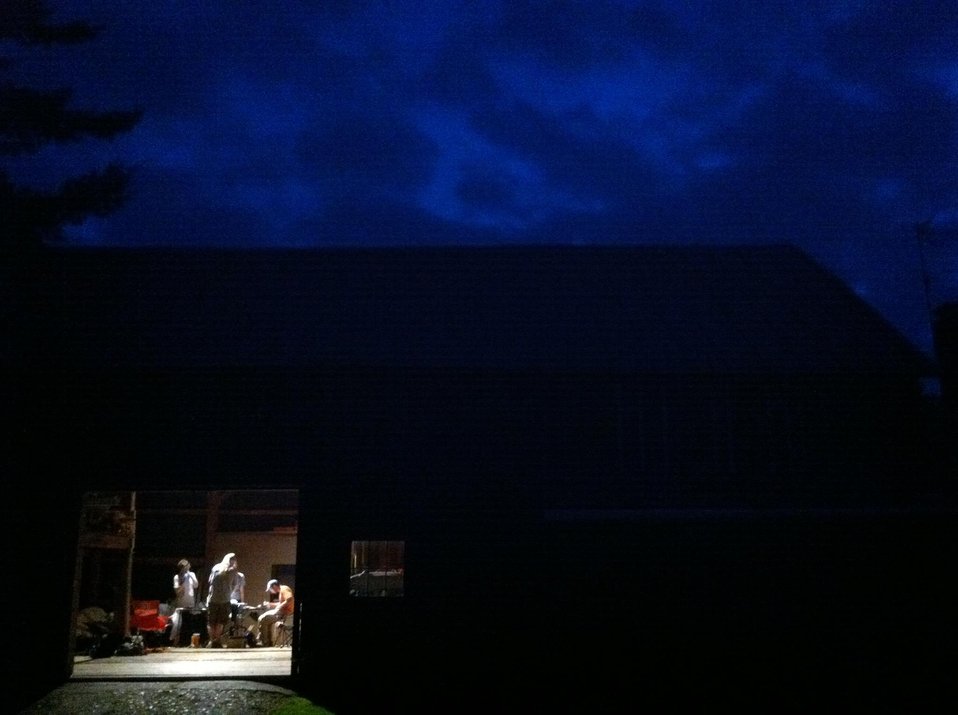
Researchers and biologists in barn with maternity colony